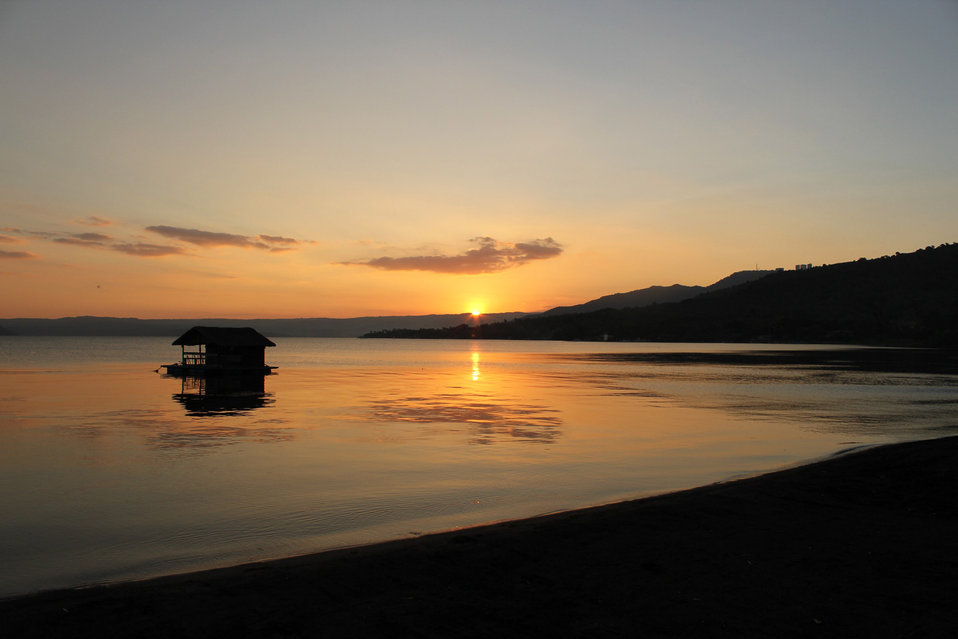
Beautiful sunset #2.